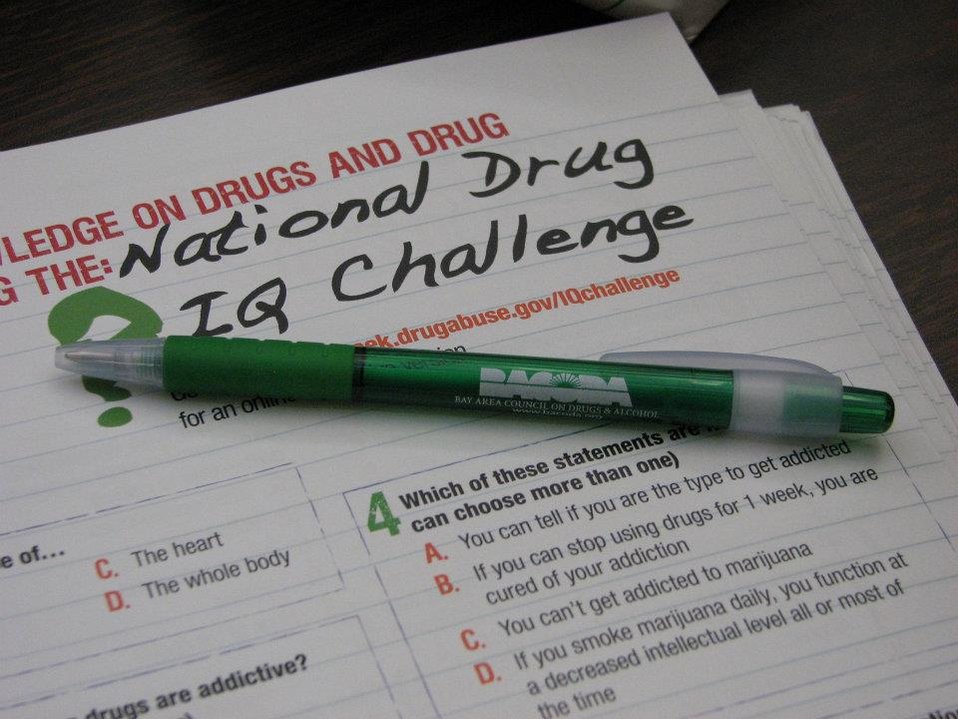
La Marque High School's NDFW event

BACODA collaborated with University of Texas Medical Branch's Center for Addiction Research to answer questions during lunch at La Marque High School.